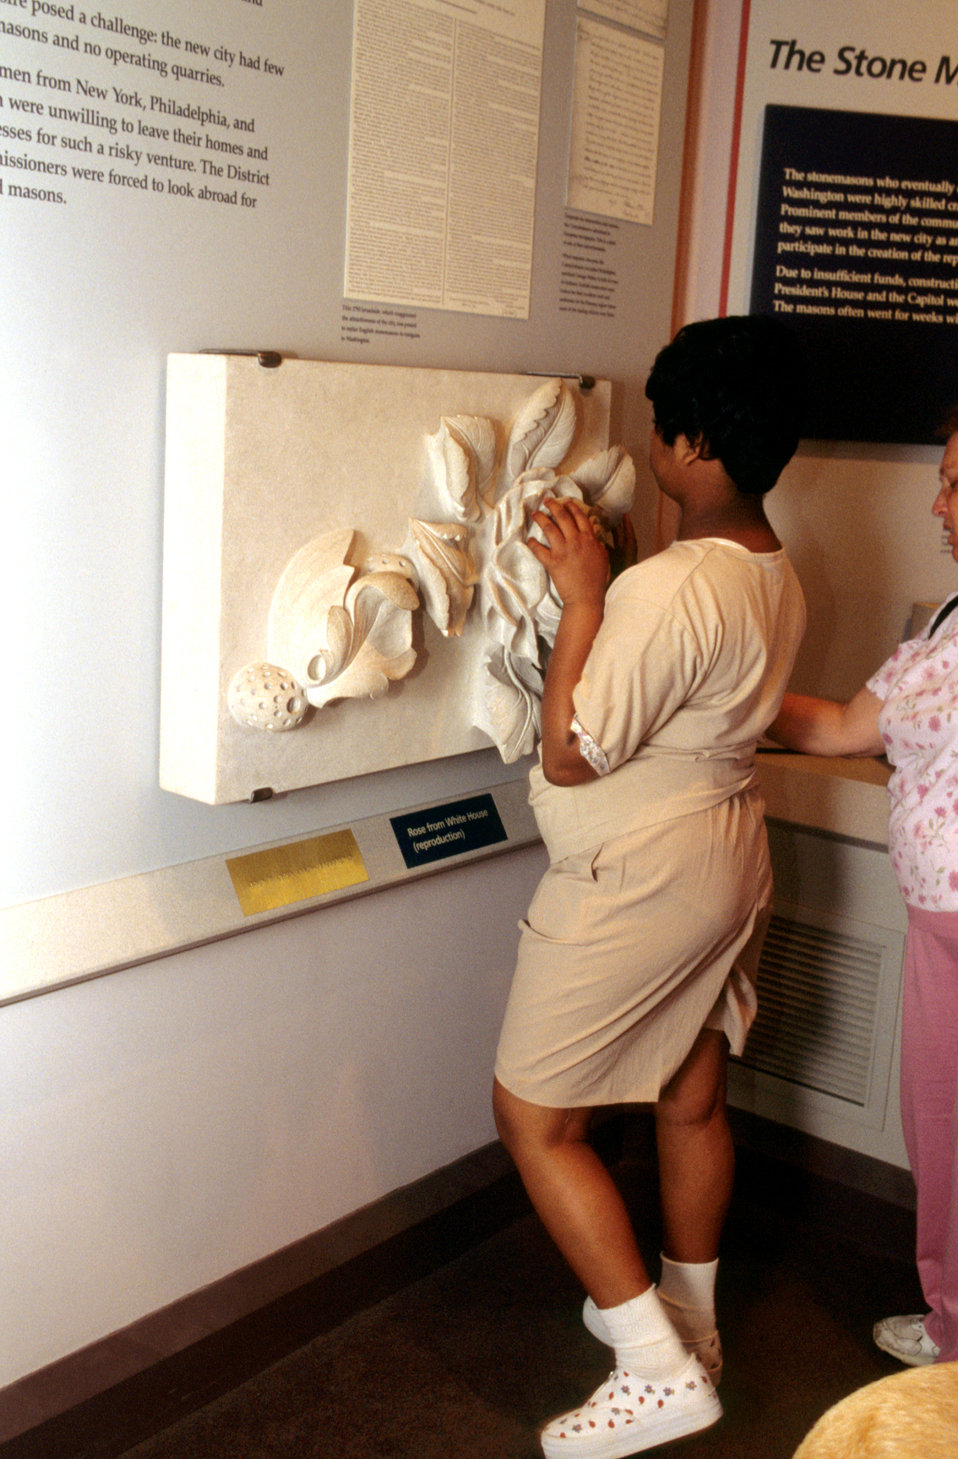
This was the fifth in a series of eight images (PHIL# 9088 - 9095) revealing the exhibits inside the U.S. National Building Museum, all of which could be touched by all visitors, including adults, children, and especially those who were mobility, or visually impaired. Consideration paid to those with such impairments during the designing of such a facility, enhanced the enjoyment experienced by all participants, as well as their overall learning experience. Mounted so that standing or seated users could fully appreciate their visit, the exhibits included Braille descriptions, large print signs. Here, two visually-impaired women were interacting with a sculpture entitled, 'A rose from the White House'. 'The Center for Universal Design (CUD) is a national research, information, and technical assistance center that evaluates, develops, and promotes accessible and universal design in housing, buildings, outdoor and urban settings and related products.'